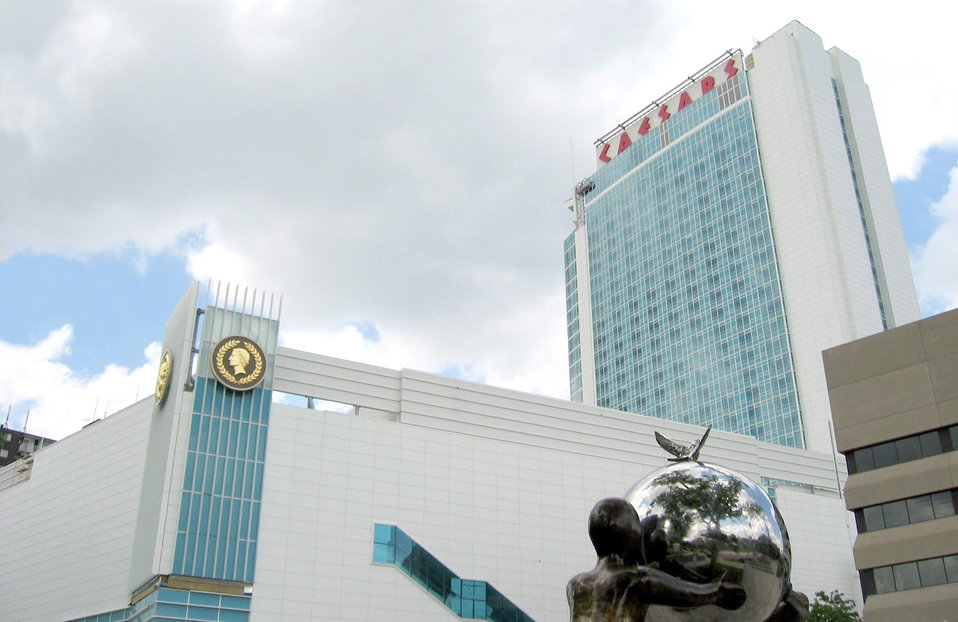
Photograph of Caesars Windsor taken by Yavno. Deutsch: Das Caesars Windsor in Windsor, Kanada.